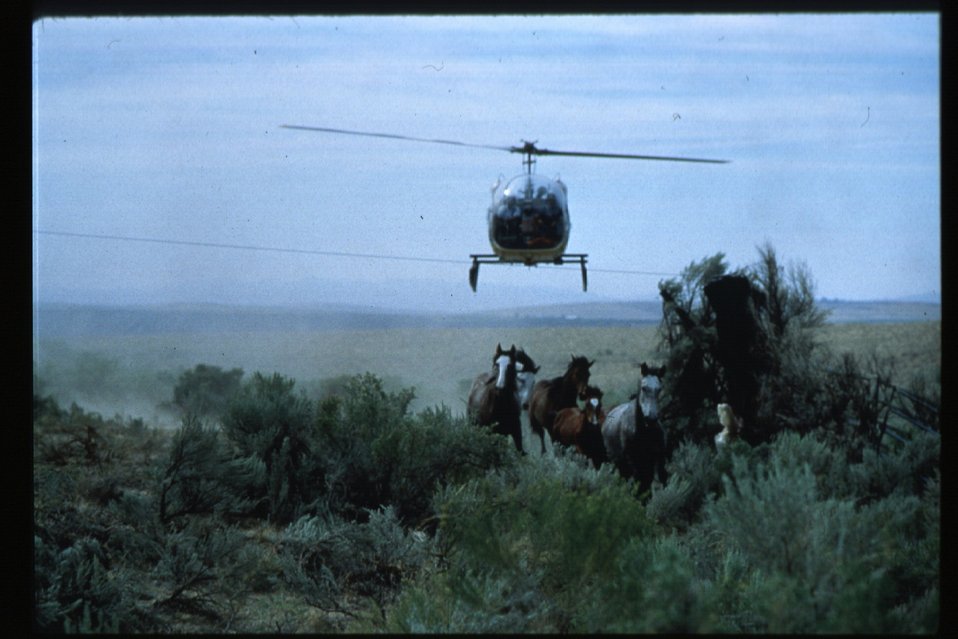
Helicopter Roundup Wild Horse and Burro Adoptions Program Owyhee Field Office Boise Corrals Lower Snake River District LSRD